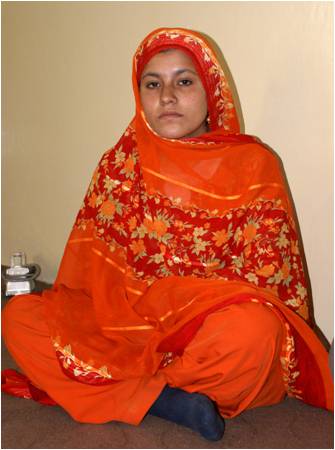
Midwife Tackles Healthcare Problems

Afghanistan has one of the highest maternal mortality rates in the world, with an estimated 1,800 maternal deaths per 100,000 live births. Access to reliable maternity and child healthcare is limited in the more remote parts of Afghanistan’s eastern region due to a lack of infrastructure, education, and professional services. The presence of a trained birth attendant can prevent many of the deaths. Together with the Ministry of Public Health (MoPH) and service providers, USAID’s Alternative Development Program – East (ADP- E) has ad-dressed this situation by supporting midwifery training for women from the eastern region’s isolated Nooristan Province.
Shah Bibi is one of 18 women selected by their home communities to take part in an 18-month course offered by the Ghanikhail Midwifery Training Center located in Nangarhar Province. During the MoPH and Jhpiego (an affiliate organization of Johns Hopkins University) certi-fied training, the women learned a range of both clinical and practical aspects of community midwifery, including antenatal, natal, and post-natal care. The students also learned to assist with normal births and provide health education to mothers and children during house visits and to know when to refer women with critical delivery conditions to provincial hospitals.
After certification as a midwife, Shah Bibi began working at the Waigal Basic Health Center (BHC) in her native town of Waigal in Nooristan Province’s Waigal District. Traveling long distances into remote mountain villages by car and foot to provide maternal services and deliver babies in an area with a population of 12,000, Shah Bibi and her two colleagues at the center are in high demand.
“Before we started working at the Waigal BHC, there were numerous cases of unsuccessful deliveries resulting in either mother or baby deaths,” Shah Bibi said. “During the seven months I have worked at the clinic, there were only two cases of unsuccessful deliveries.”
In addition to long distances and the need for additional midwives in the area, Shah Bibi faces other challenges. Nooristan has always been insecure, with criminal and anti-government elements. In Waig-al’s neighboring Kamdesh District, US forces suffered heavy casual-ties from attacks on remote outposts. Despite this insecurity, Shah Bibi continues her work with an increased sense of determination.
“Tribal elders have placed importance on my line of work,” she ex-plains. “As a result, the anti-government elements do not target me, and I am granted access to areas under their control in order to pro-vide maternity services to women who have no other access to basic healthcare.”